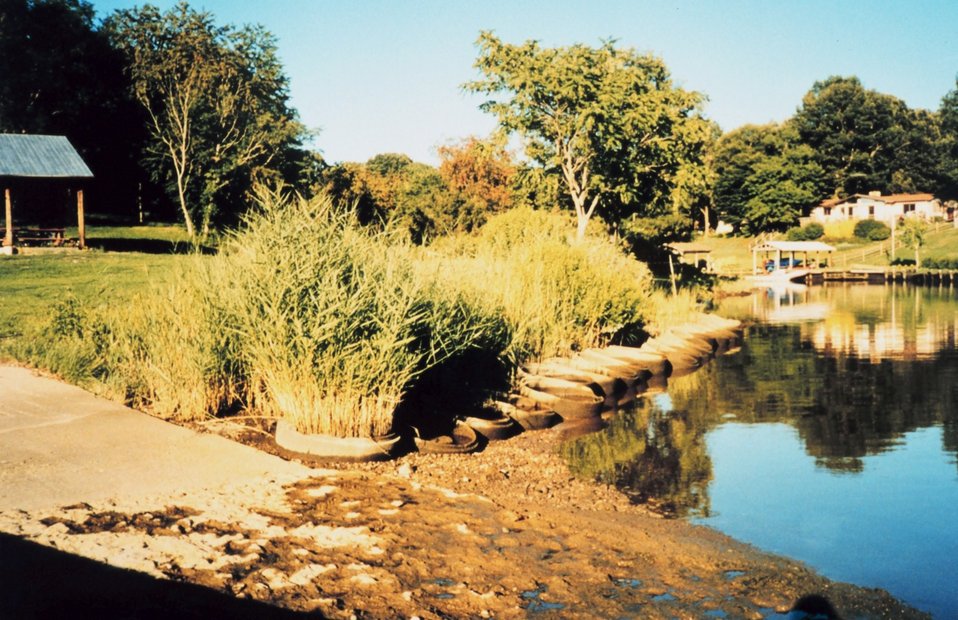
Well-rings and grasses provide erosion control in this location.